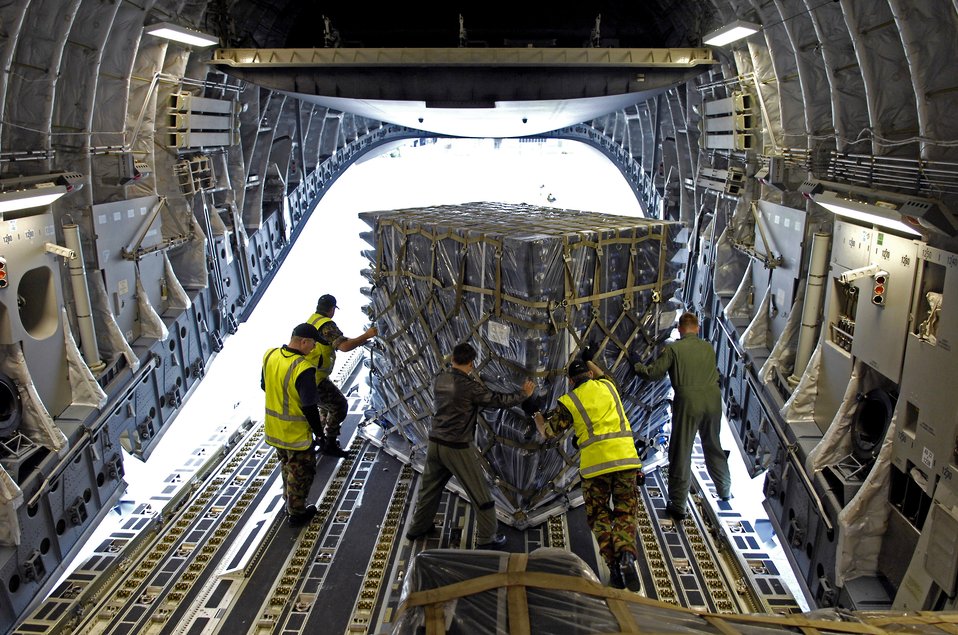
Getting ready to fly to McMurdo

Airmen and New Zealand Defense Force terminal operations people offload a pallet from a C-17 Globemaster III at Christchurch, New Zealand, Aug. 18. The Airmen and the C-17 are at Christchurch to begin the annual winter fly-in, known as WinFly. During these flights, aircrews transport scientists, support personnel, food and equipment for the U.S. Antarctic program at McMurdo Station, Antarctica. WinFly is the opening of the first flights to McMurdo station, which closed for the austral winter in February.